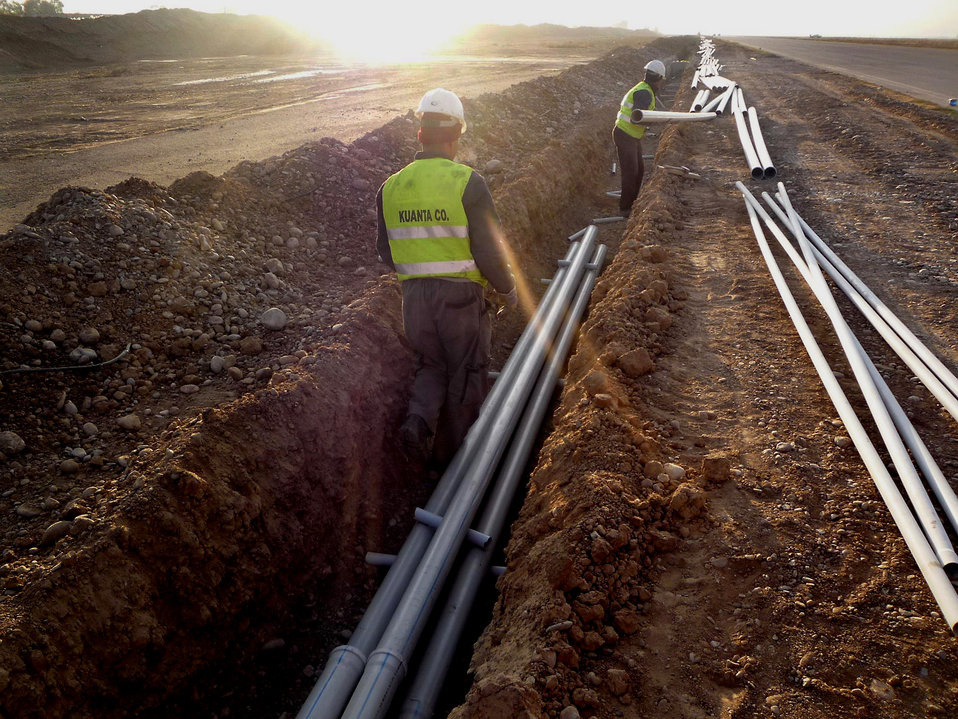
ESC group works to meet Iraqi air traffic control needs

Contractors install conduit lines at Kirkuk Regional Air Base, Iraq, as part of a foreign military sales effort being managed by the Electronic Systems Center's 853rd Electronic Systems Group at Hanscom Air Force Base, Mass.